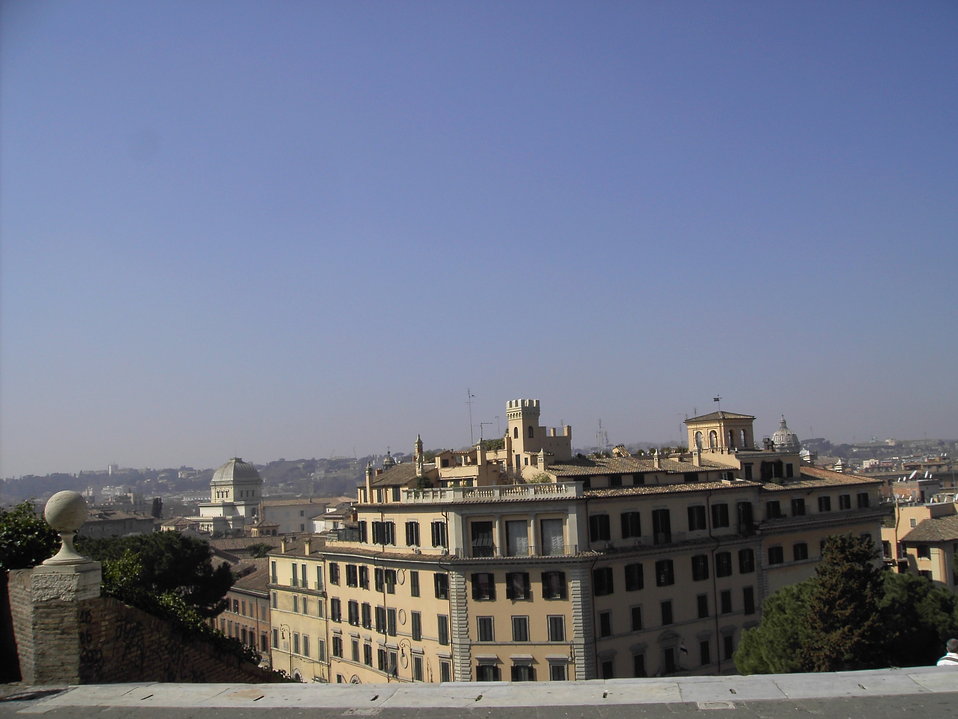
Campitelli - palazzo Massimo di Rignano da araceli - Immagine 014